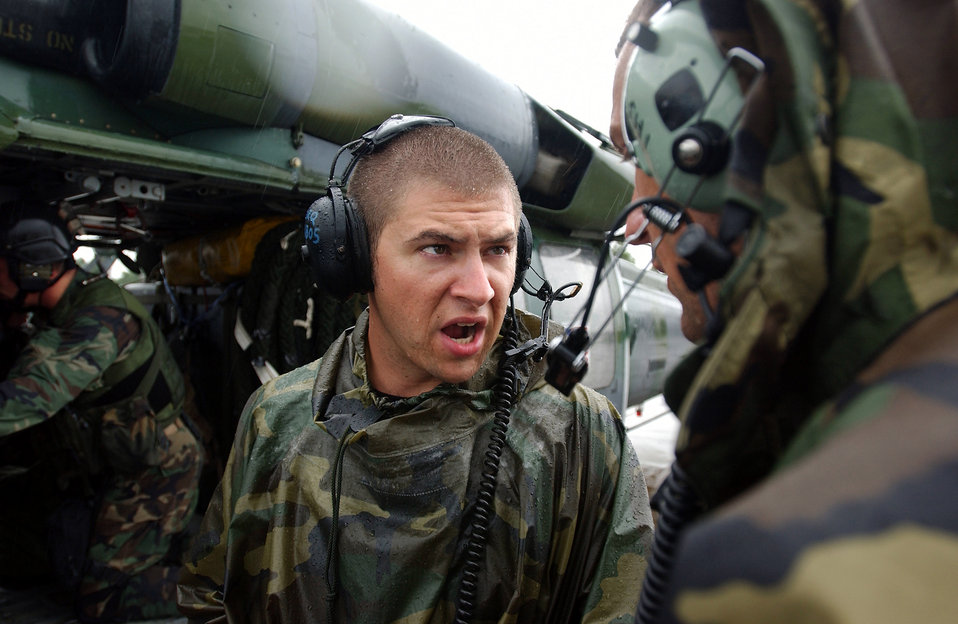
Listen up

LUNGI, Sierra Leone -- Staff Sgt. Jason Krokos speaks with other maintainers here July 24 while Marines load onto HH-60G Pave Hawk helicopters. The Marines are part of the Fleet Antiterrorism Security Team from U.S. Naval Air Station Rota, Spain. The 398th Air Expeditionary Group's helicopters and airmen provide personnel recovery and emergency evacuation capability for the Marines and the humanitarian assistance survey team in Liberia. Krokos is a crew chief with the 85th Maintenance Squadron deployed from Naval Air Station Keflavik, Iceland.